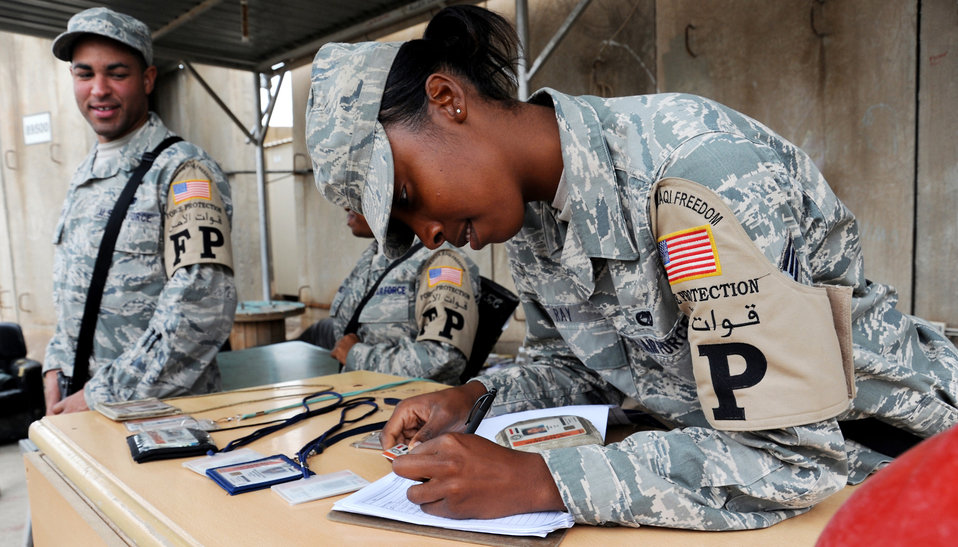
Force protection Airmen add another layer of armor in base defense

Senior Airman Laquisha Ray checks identification credentials for local nationals at the gravel yard Nov. 19, 2009 at Joint Base Balad, Iraq. Airman Ray assigns badges to local nationals working on Joint Base Balad. Airman Ray is a 332nd Expeditionary Civil Engineer Squadron force protection escort.